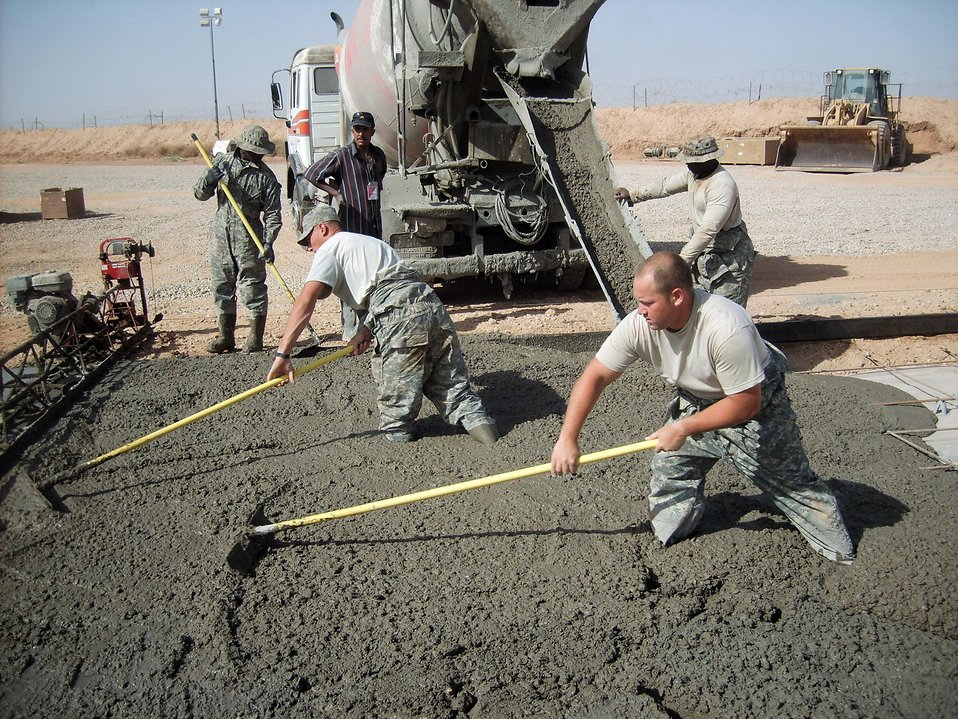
CE Airmen complete projects to benefit U.S., Iraqi army

Senior Airmen Dan Smith, Deion Williams, Airmen 1st Class George Farrington and Richard Simmons pour and rake concrete pads during a project to improve Forward Operating Base Caldwell, Iraq. The concrete pads will allow Soldiers to perform maintenance on their vehicles without having to lay in the mud. All are heavy equipment operators with the 732nd Expeditionary Civil Engineer Squadron.